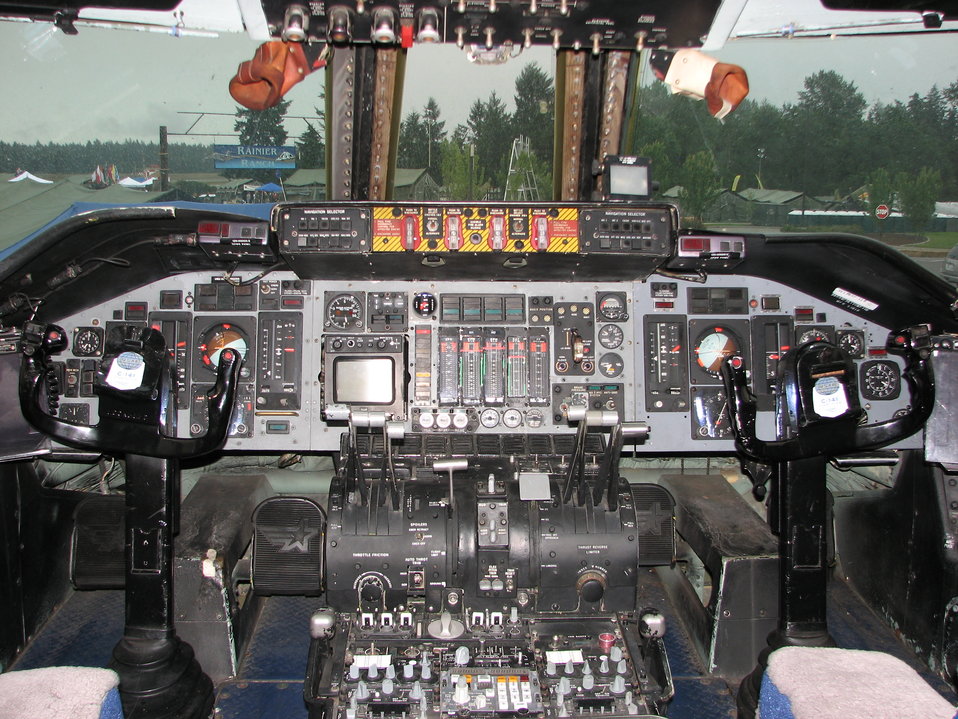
Lockheed C-141 Cockpit.